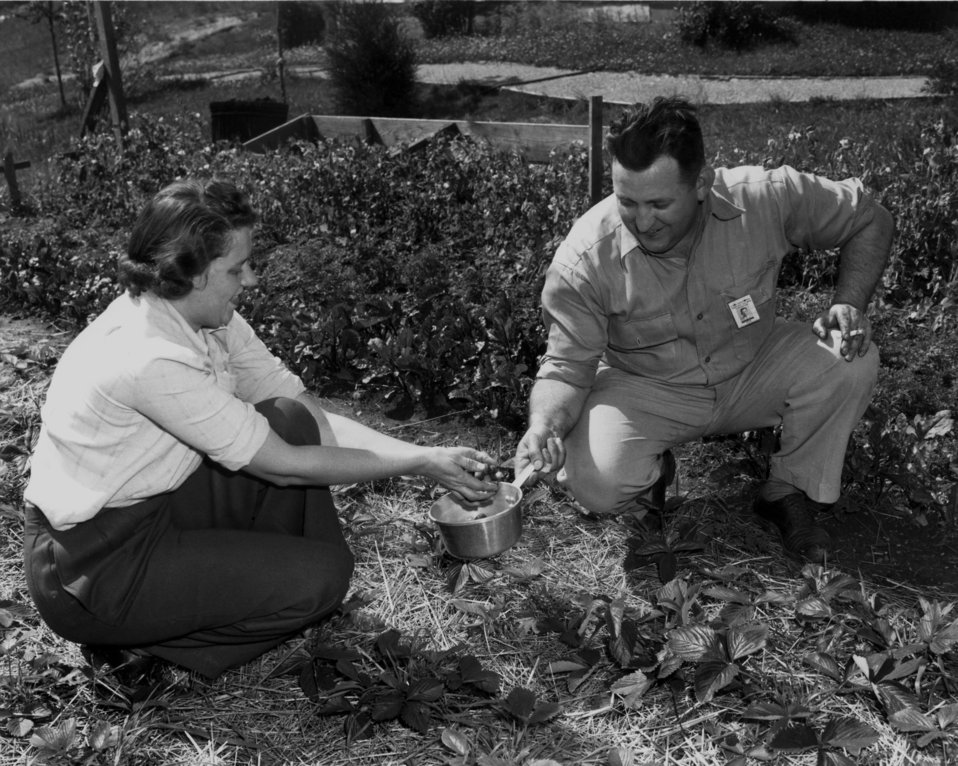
Marriaged Couple with Victory Garden Oak Ridge

pro 548-2 DOE Photo Ed Westcott 5/11/45 Oak Ridge Tennessee